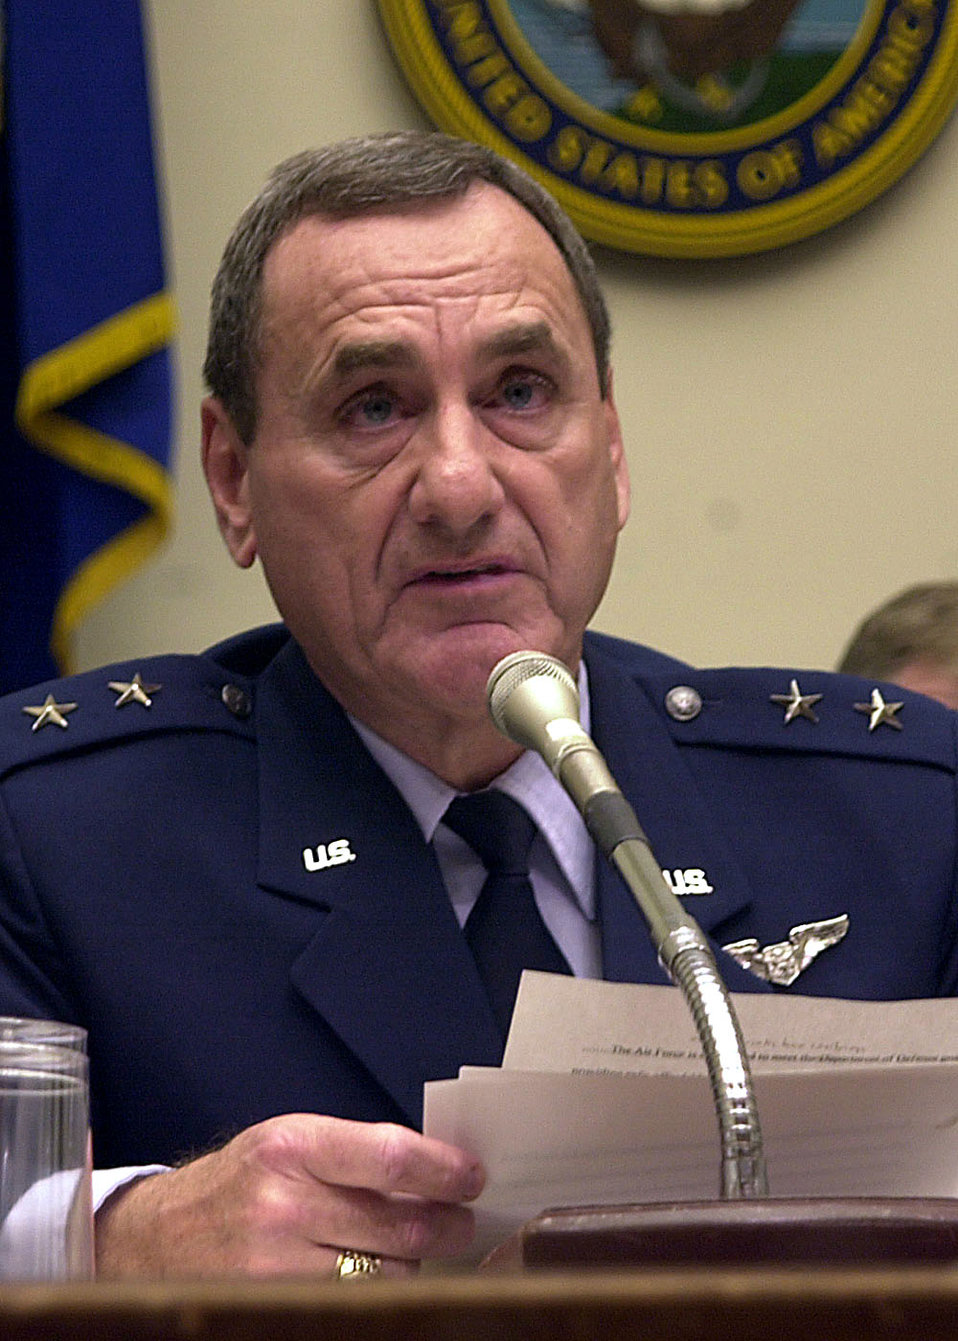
Robbins

WASHINGTON -- Maj. Gen. Earnest O. Robbins II, the Air Force Civil Engineer, testified before congress March 20 concerning the Air Force's construction portion of the 2004 Defense Authorization Act budget request. Also discussed at the testimony were Air Force dormitories, child care facilities and base realignment and closure.